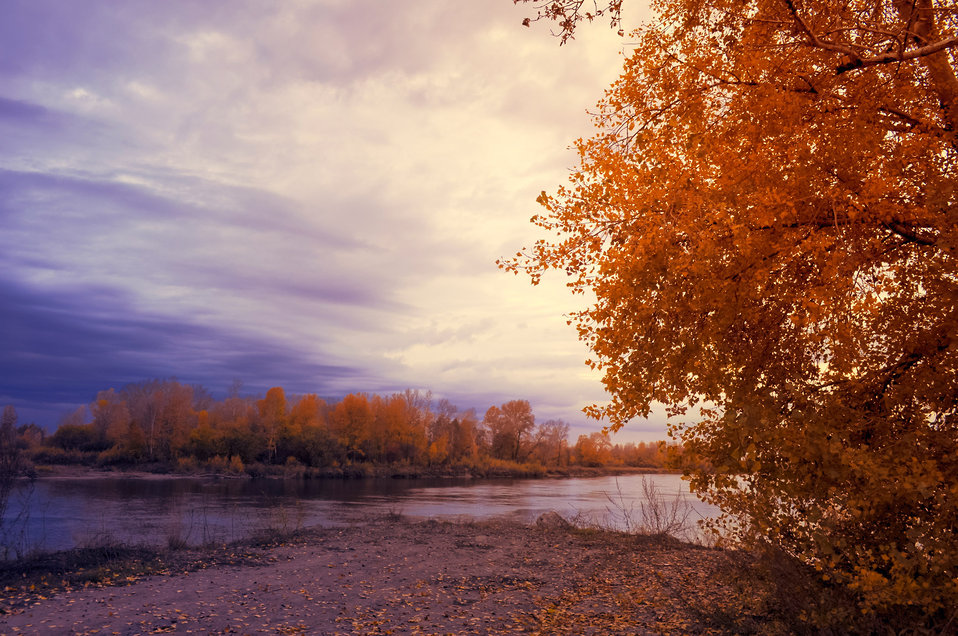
Sunset

Beautiful sky at sunset.